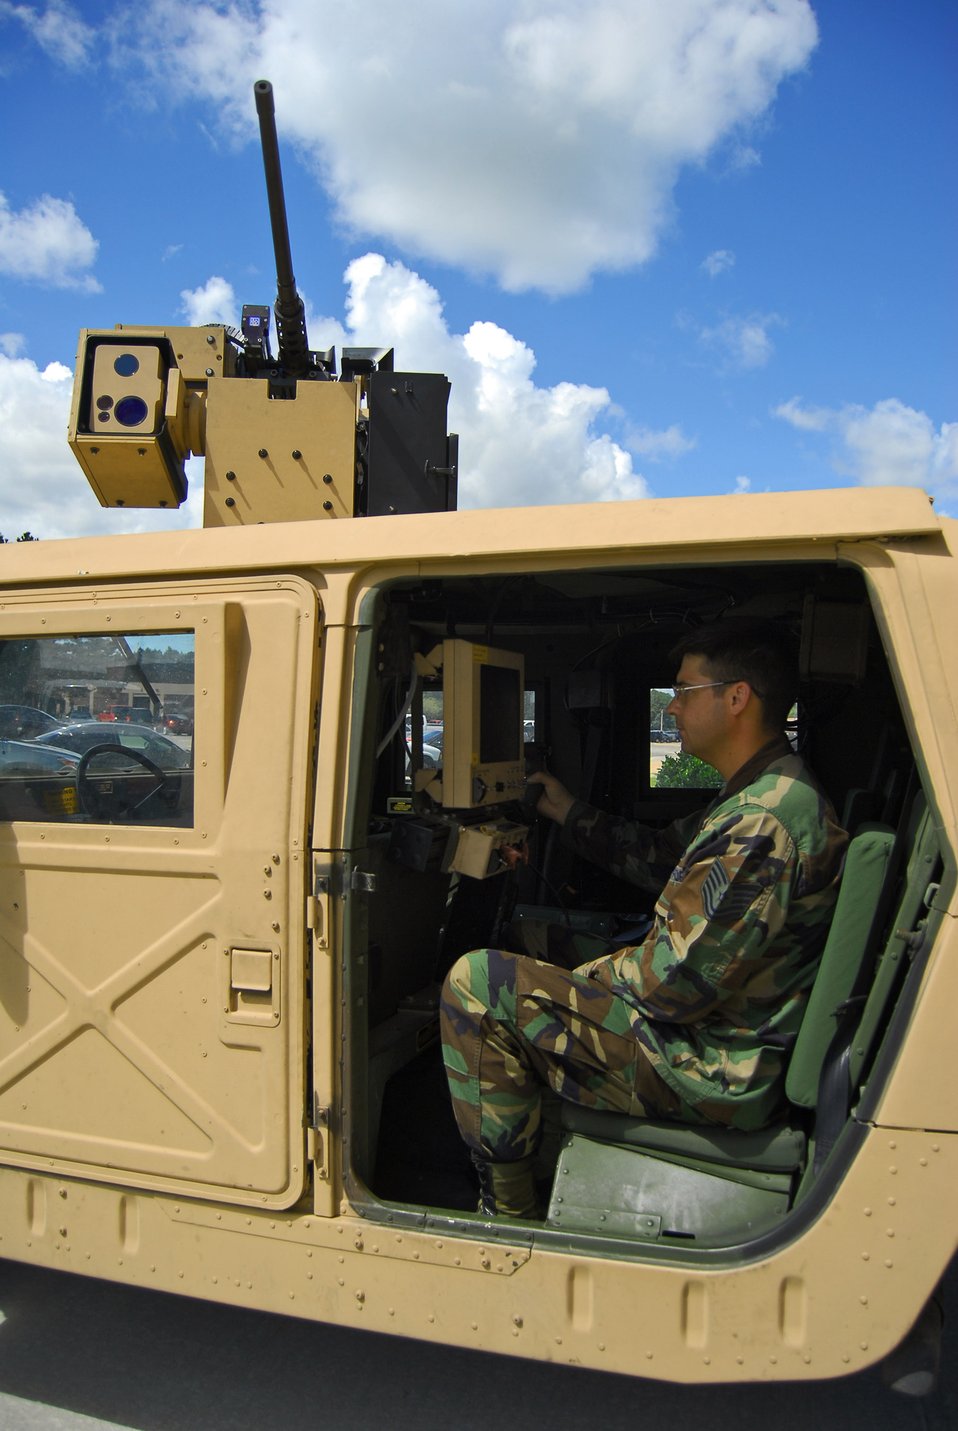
Deployed gunners have eagle eyes with safer turret system

Tech. Sgt. Mark Klinefelter operates a common remotely operated weapon station Sept. 12 at Moody Air Force Base, Ga. The CROWS turret allows a gunner to remain safely protected inside his armored vehicle while operating the computer-stabilized, laser-aimed weapon. Sergeank Klinefelter is assigned to the 824th Security Forces Squadron Alpha Flight.